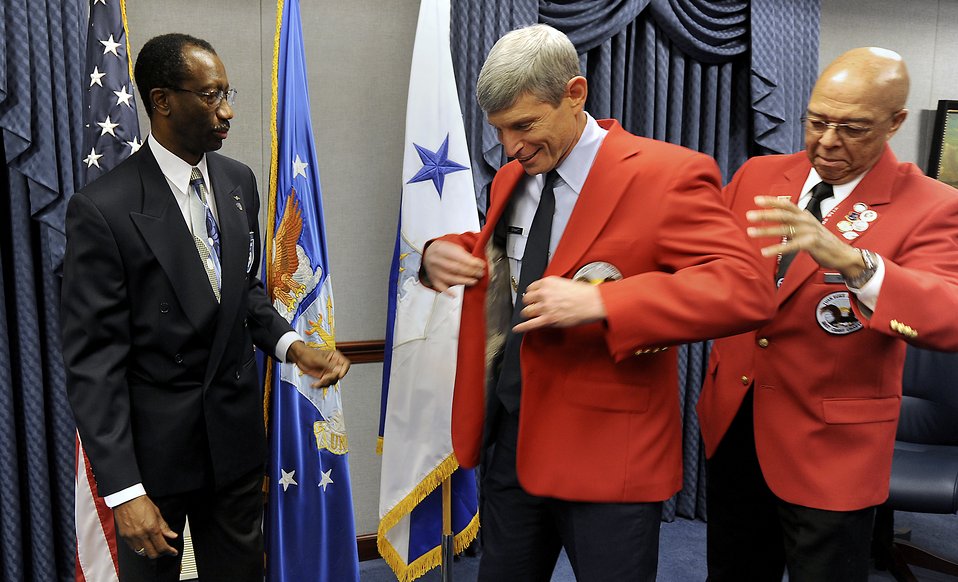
CSAF becomes honorary Tuskegee Airman

Byron Morris (right), the Tuskegee Airmen East Coast Chapter president, helps Air Force Chief of Staff Gen. Norton Schwartz slip on his new Tuskegee Airmen red jacket at the Pentagon Nov. 9, 2010, as retired Brig. Gen. Leon Johnson, Tuskegee Airmen Incorporated president, looks on. General Johnson presented General Schwartz with an honorary membership in Tuskegee Airmen during a brief ceremony. General Schwartz joins Gen. Merrill McPeak and Gen. Ronald Fogleman as the only Air Force chiefs of staff to be recognized with the honorary membership.